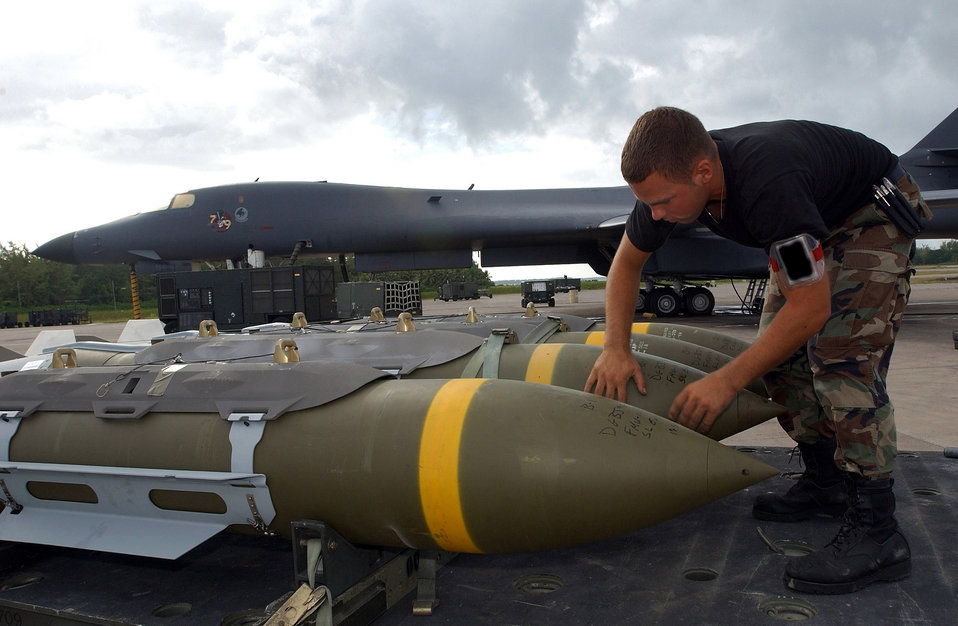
Bomb prep

OPERATION ENDURING FREEDOM -- An Air Force weapons loader from the 28th Air Expeditionary Wing preps a 2,000-pound bomb to be loaded into a B-1B Lancer bomber Oct. 22, during Operation Enduring Freedom. Air Force B-2 Spirit, B-1B and B-52 Stratofortress aircraft have dropped more than 80 percent of the tonnage on combat missions over Afghanistan.